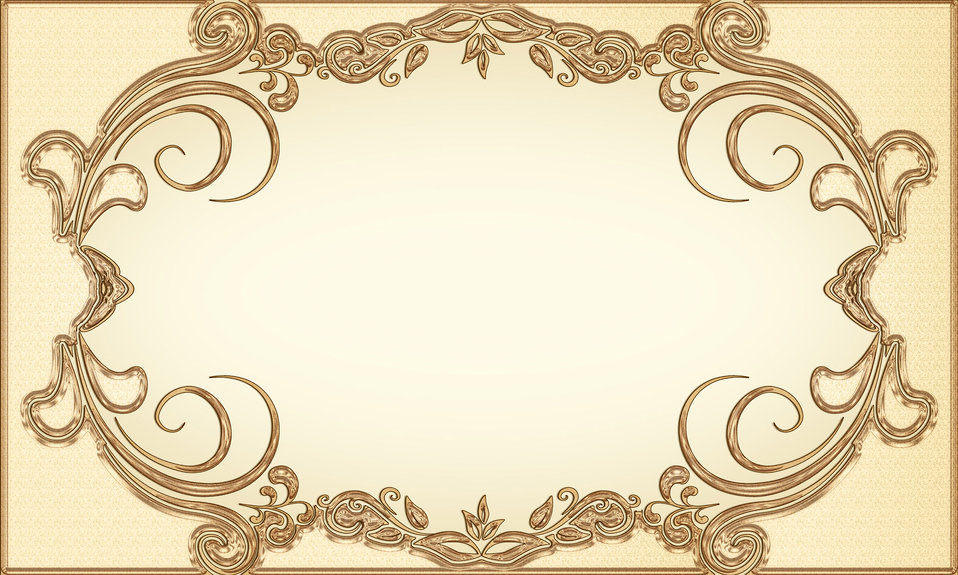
Gold frame

Beautiful golden frame for your creativity.